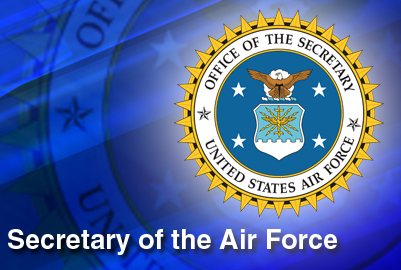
SecAF priorities